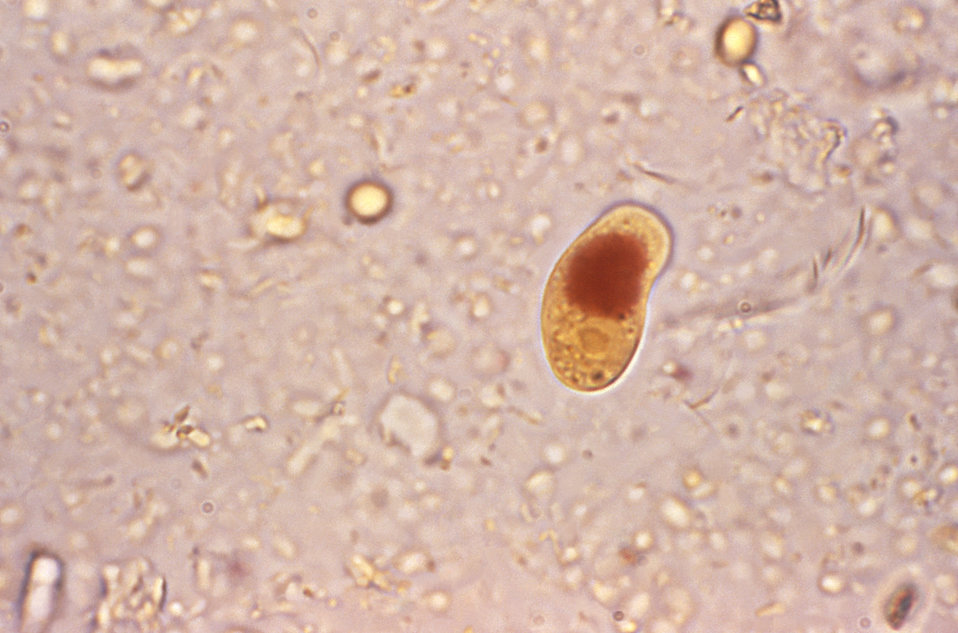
This iodine-stained photomicrograph depicts a single oblong Iodamoeba buetschlii parasitic cyst within which the darkly-staining glycogen vacuole is clearly visible.